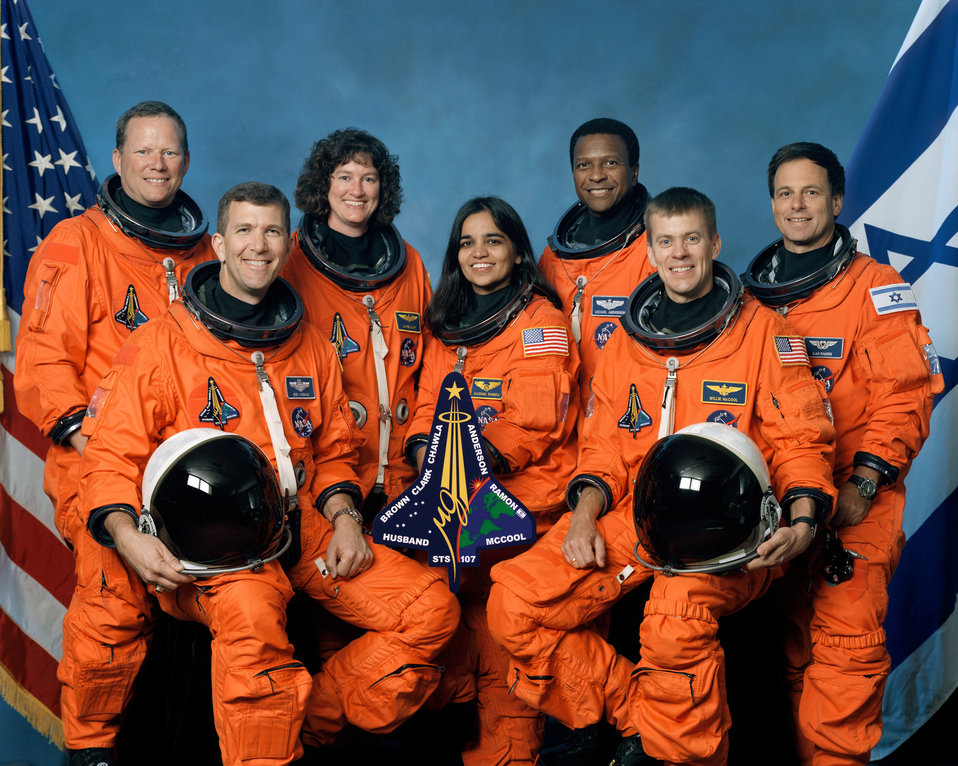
Two airmen among seven lost in shuttle disaster

WASHINGTON -- The STS-107 crew includes, from the left, Mission Specialist David Brown, Commander Rick Husband, Mission Specialists Laurel Clark, Kalpana Chawla and Michael Anderson, Pilot William McCool and Payload Specialist Ilan Ramon. The seven member crew, which includes two airmen, died March 18, 2003 when the shuttle crash while returning from a space mission.